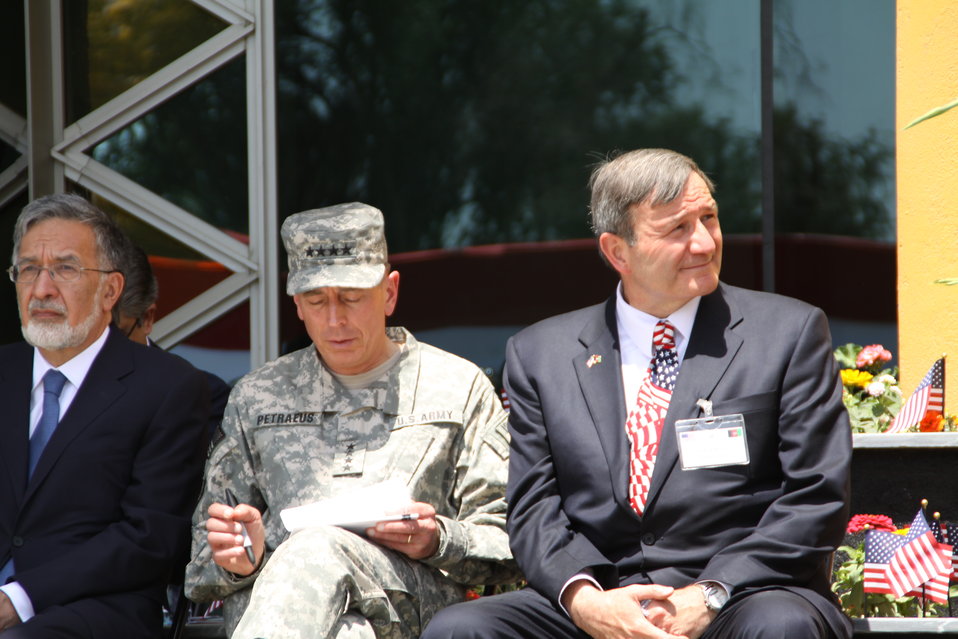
Kabul Official July 4th Celebration